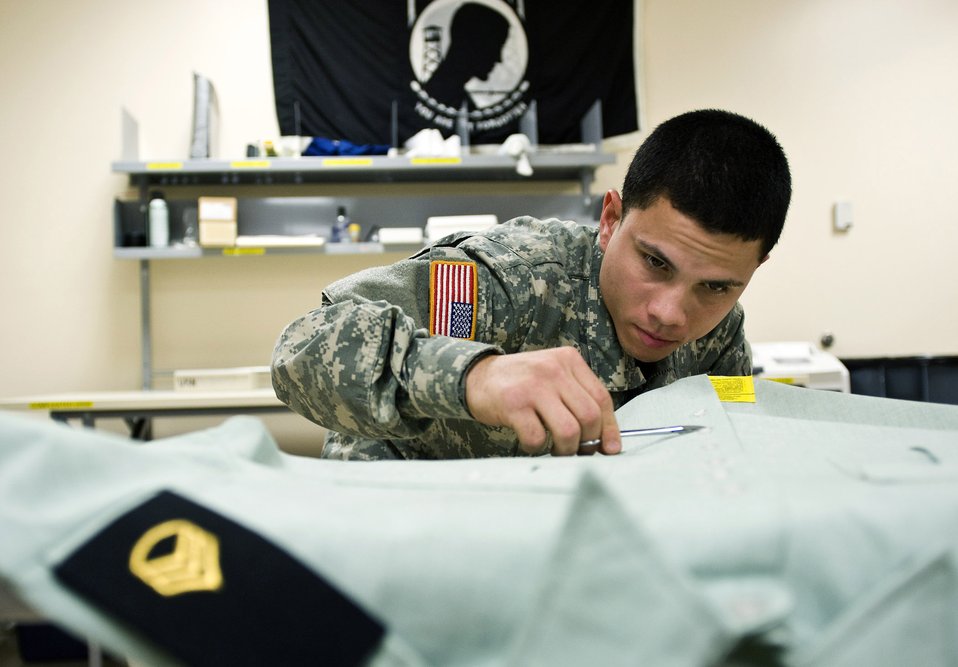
Air Force Mortuary Affairs Operations Center

Specialist Xavier Gonzalez, a mortuary affairs specialist, prepares a U.S. Army service dress shirt for a fallen solider March 31. Servicemembers working in the uniform section of the Air Force Mortuary Affairs Operations Center at Dover Air Force Base, Del., prepare uniforms for the fallen heroes and work with military escorts for the dignified-transfer-of-remains process. Specialist Gonzalez is deployed from the Army Reserve, 311th Quartermaster Company in Puerto Rico.